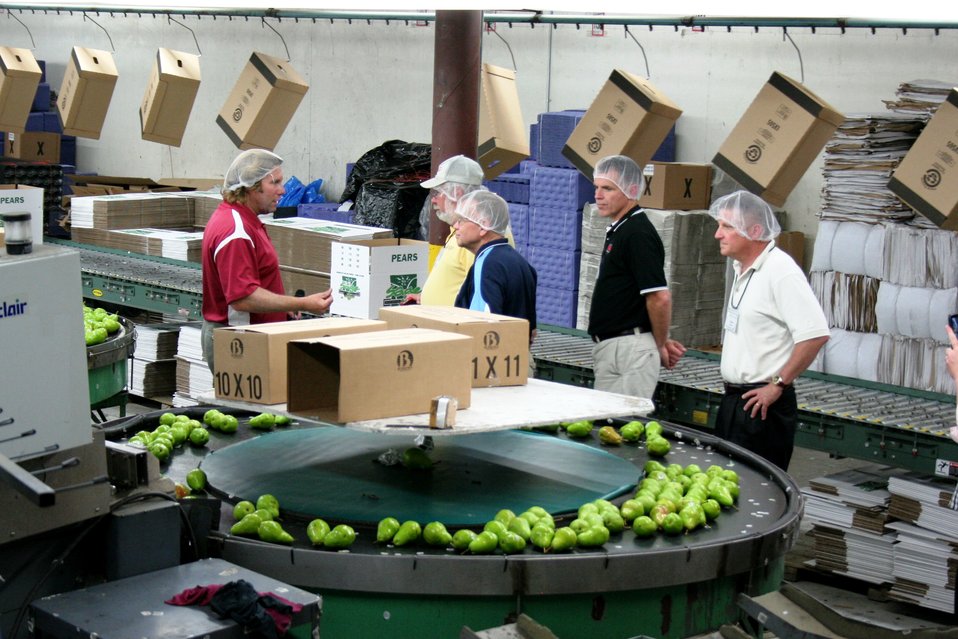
On the Road with Mike Taylor

FDA Deputy Commissioner Michael Taylor (left) and colleagues started a five-day tour of the Pacific Northwest on Sunday, Aug. 11, 2013 -- visiting Idaho, Oregon and Washington -- to get a first-hand look at produce production and irrigation operations, and to discuss the proposed Produce Safety Rule with growers, food industry representatives and state officials. The Pacific Northwest tour included a visit to the packing house at Valley Fruit in Wapato, Wash. For more about Mike's multi-region tour, read these FDA Voice blog posts:

• Hearing the Concerns of Maine Growers Striving for Agricultural Diversity
• On the Road with Mike Taylor: Touring the Pacific Northwest
• On the Road with Mike Taylor, Day 2: Frank Talk in Farm Country
• On the Road with Mike Taylor, Day 3: Families and Partnerships
• On the Road with Mike Taylor, Day 4: Looking to the Future